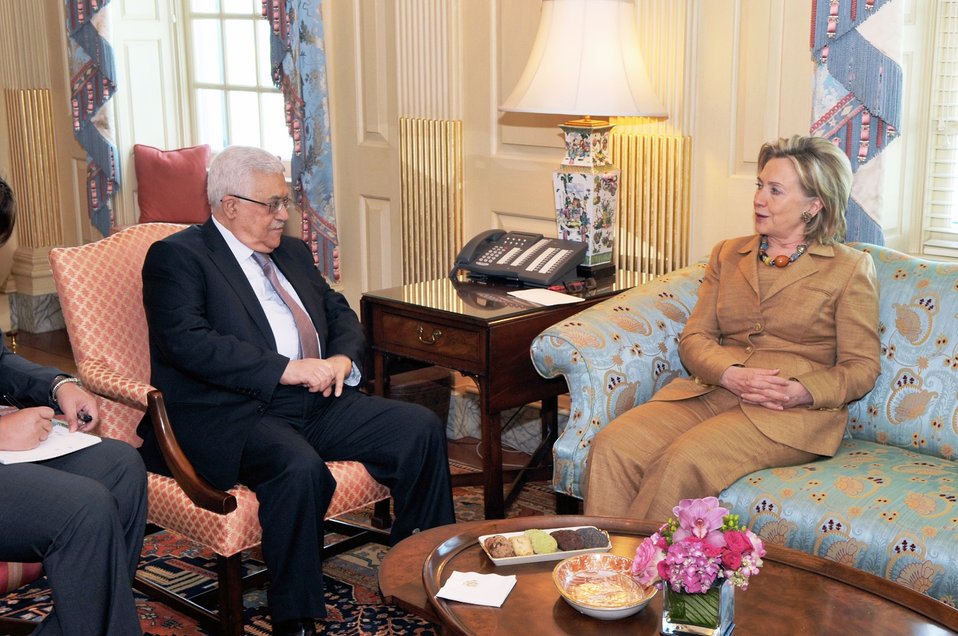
Secretary Clinton Holds Bilateral Meeting With Palestinian National Authority President Mahmoud Abbas

U.S. Secretary of State Hillary Rodham Clinton holds a bilateral meeting with Dr. Mahmoud Abbas, Chairman of the Executive Committee of the PLO and President of the Palestinian National Authority, at the U.S. Department of State in Washington, D.C., on June 11, 2010.